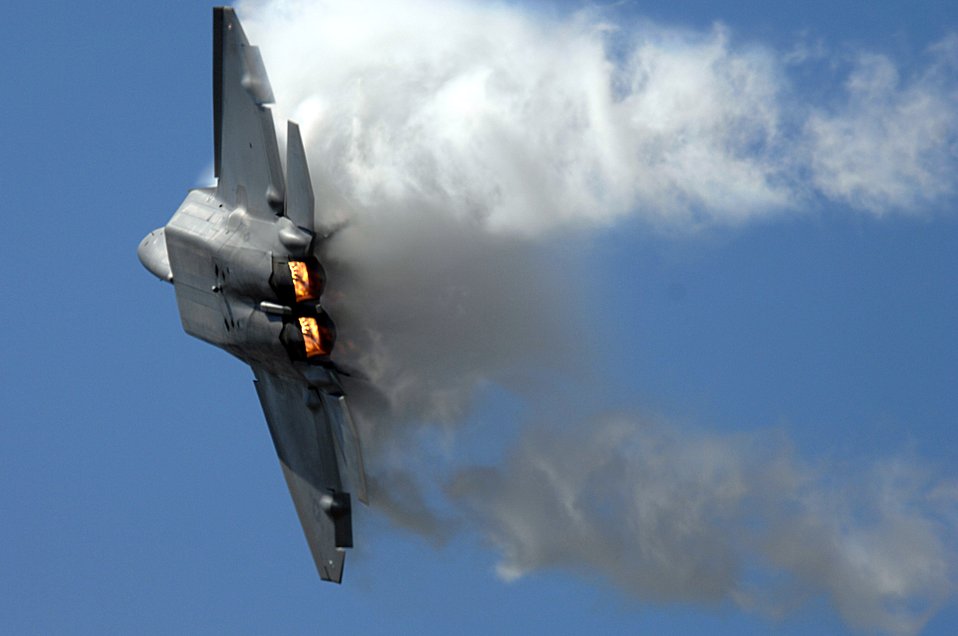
Raptor, Thunderbirds fly over California

The F-22 Raptor performs for thousands during an April 1 air show at Naval Base Ventura County in Point Mugu, Calif. This F-22 is based at Langley Air Force Base, Va. The F-22 is the Air Force's newest fighter aircraft. The sophisticated F-22 aerodesign, advanced flight controls, thrust vectoring, and high thrust-to-weight ratio provide the capability to outmaneuver all current and projected aircraft.